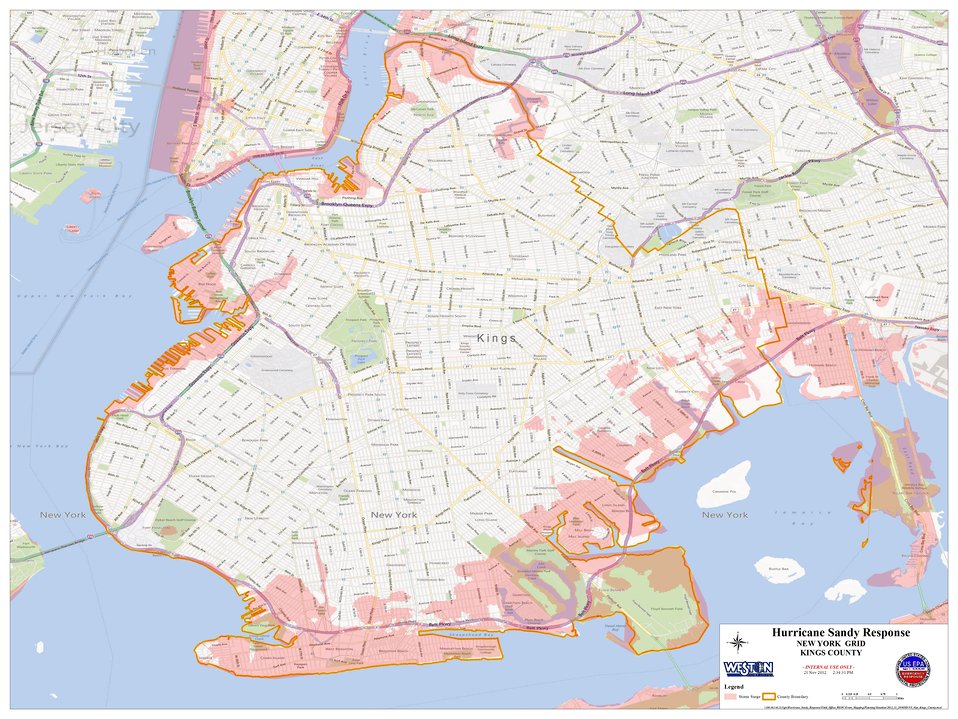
Hurricane Sandy Hazardous Waste Pickup Sites - Kings County

We're working with the New York City Department of Sanitation to collect and properly dispose of potentially hazardous common household products from flood-damaged homes and residences in New York City through Dec. 2, 2012. Here's the map for Kings County.